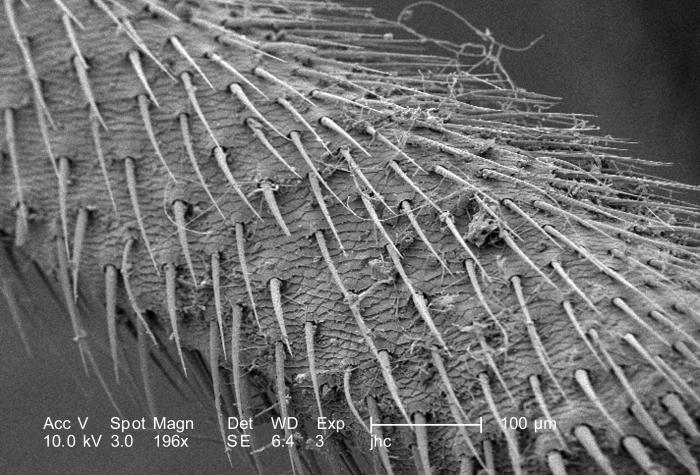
Under a magnification of 196X, approximately 1/4th the magnification of PHIL 9987, this scanning electron micrograph (SEM) revealed some of the exoskeletal ultrastructural morphology of an unidentified debris-laden insect, which had been discovered deceased in the suburbs of Decatur, Georgia. Depicted in this particular image was a section of one of the insect's six legs, which emanated from its thoracic region, located between its head and abdominal regions. The scattered particulate matter adorning the insect's exoskeletal surface was merely environmental debris common to its habitat. The fact that this organism maneuvered about on jointed legs, placed it into the Phylum Arthropoda, i.e., Arthro